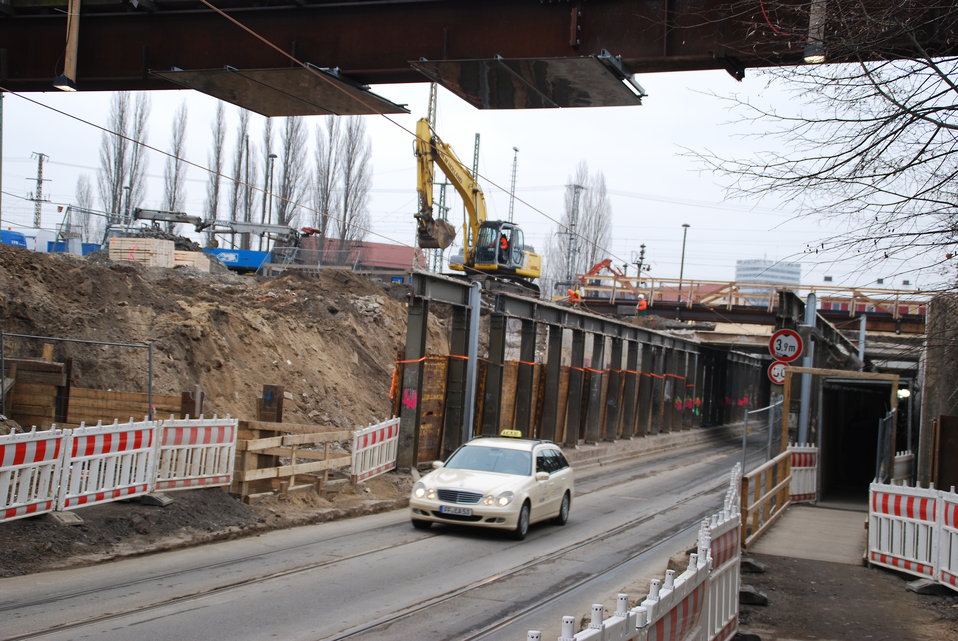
Abriss Bahnhofstunnel Frankfurt (Oder)